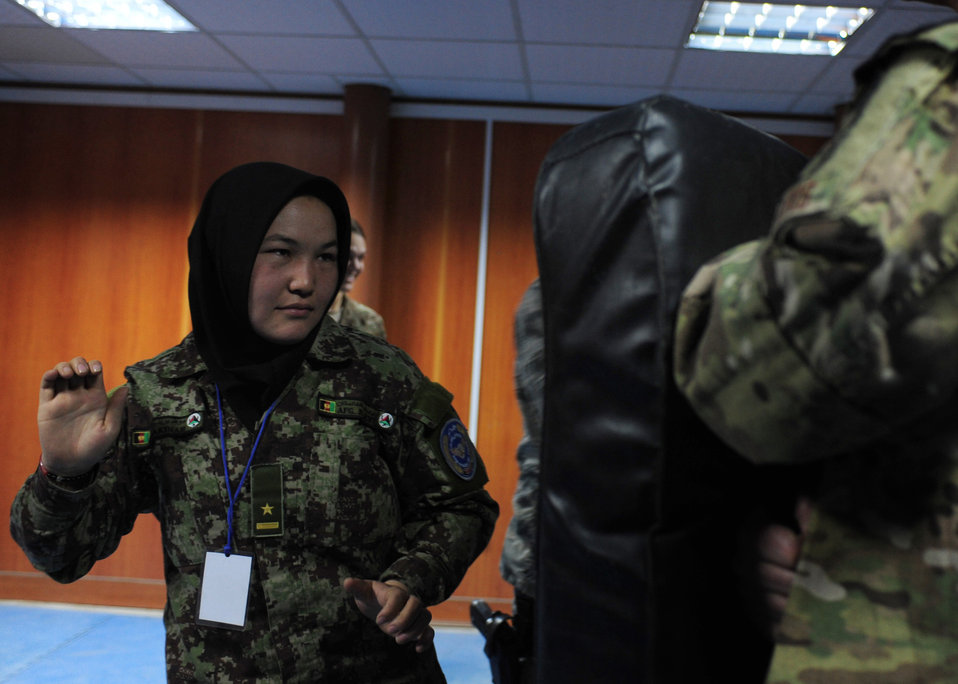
U.S. advisors teach self-defense to Afghan Air Force women

Afghan Air Force Lt. Sakina prepares to strike a simulated attacker a during a women's self-defense class at Kabul International Airport, Afghanistan, Feb. 29, 2012. Advisors from the 439th and 738th Air Expeditionary Advisory Squadrons recently held the training to prepare the students physically and mentally for what they could experience if placed in a dangerous scenario.